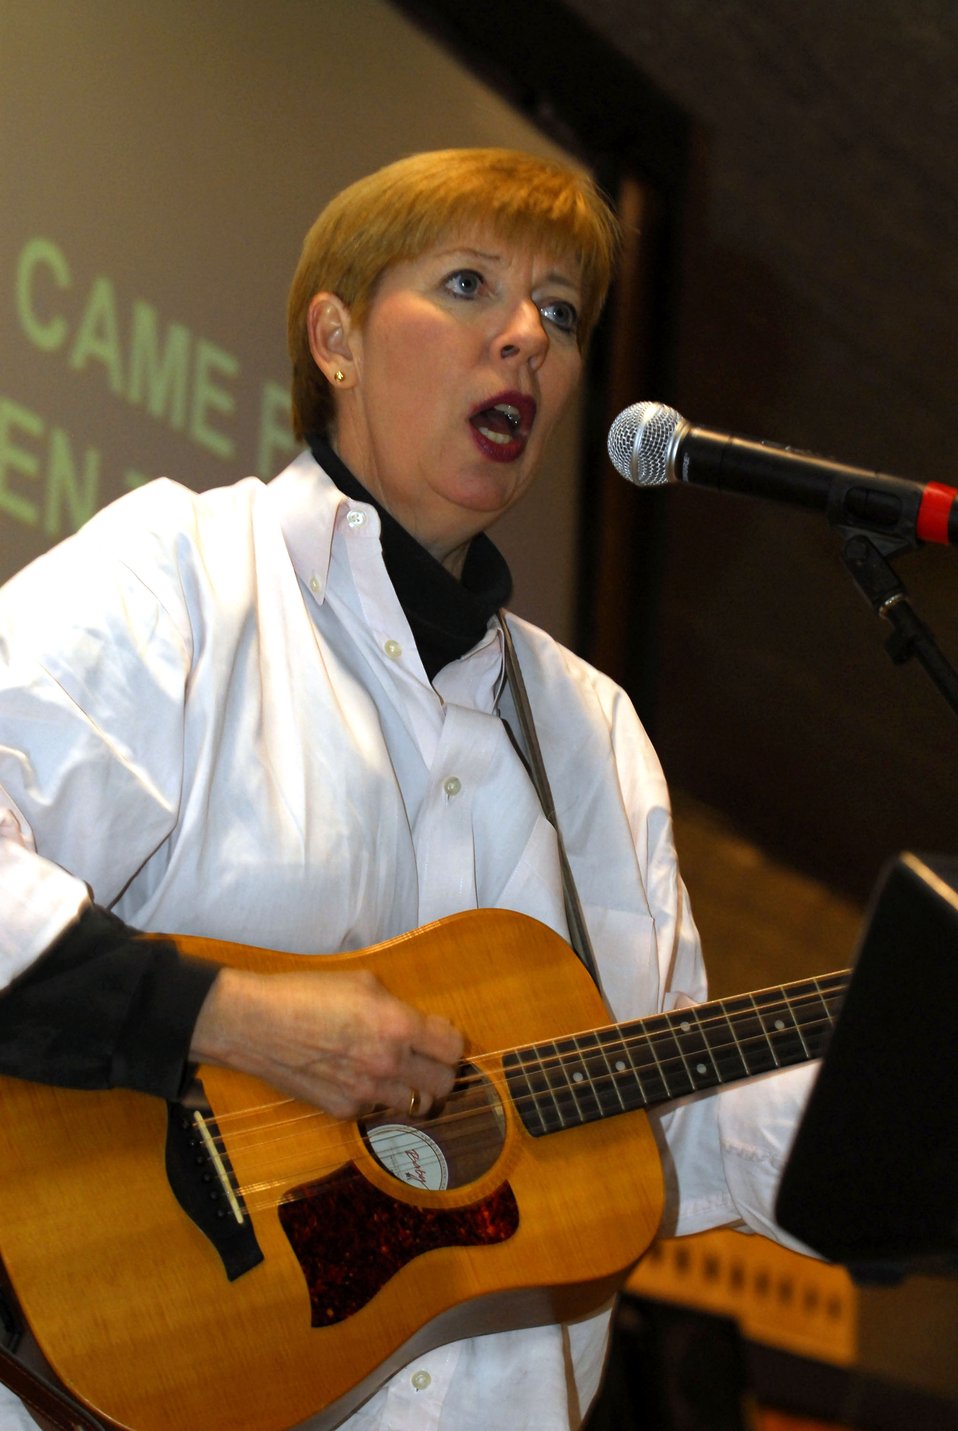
Veteran hope

Betsy Brown of Heartsong Ministries performs inspirational songs for servicemembers Nov. 26 at Balad Air Base, Iraq. She encouraged those in attendance to dance and sing along with her. Ms. Brown is touring locations in the area of responsibility alongside motivational speaker and disabled veteran Vietnam War Dave Roever.